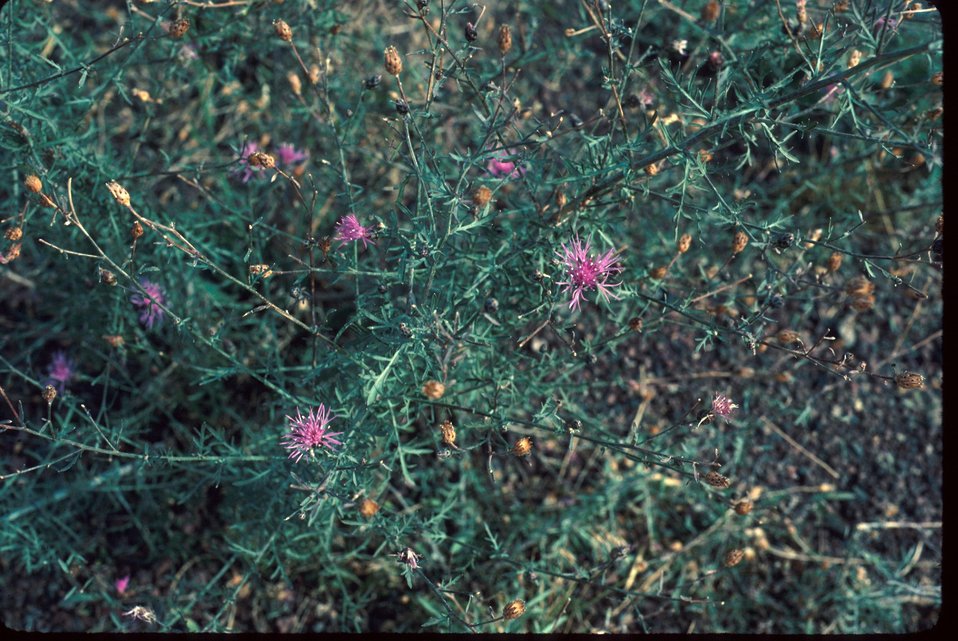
Spotted Knapweed Brush, noxious weed Wildflower